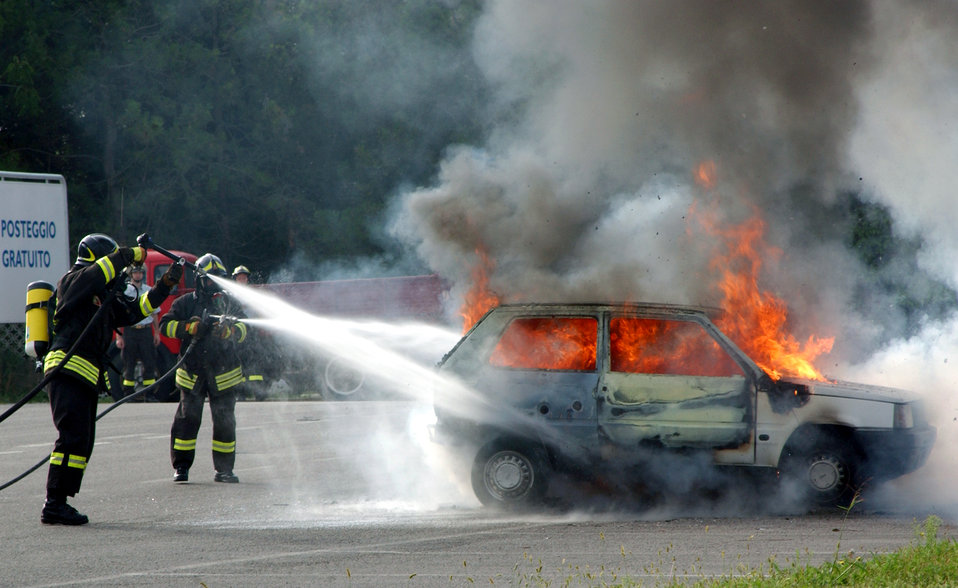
Italians, Americans work together in mass casualty exercise

ROVEREDO IN PIANO, Italy -- Firefighters extinguish a car fire during a mass casualty exercise held in a shopping district here Sept. 13. The exercise, which simulated a terrorist attack, involved Airmen from nearby Aviano Air Base and Italian authorities, and allowed them to practice and strengthen their emergency response skills together.